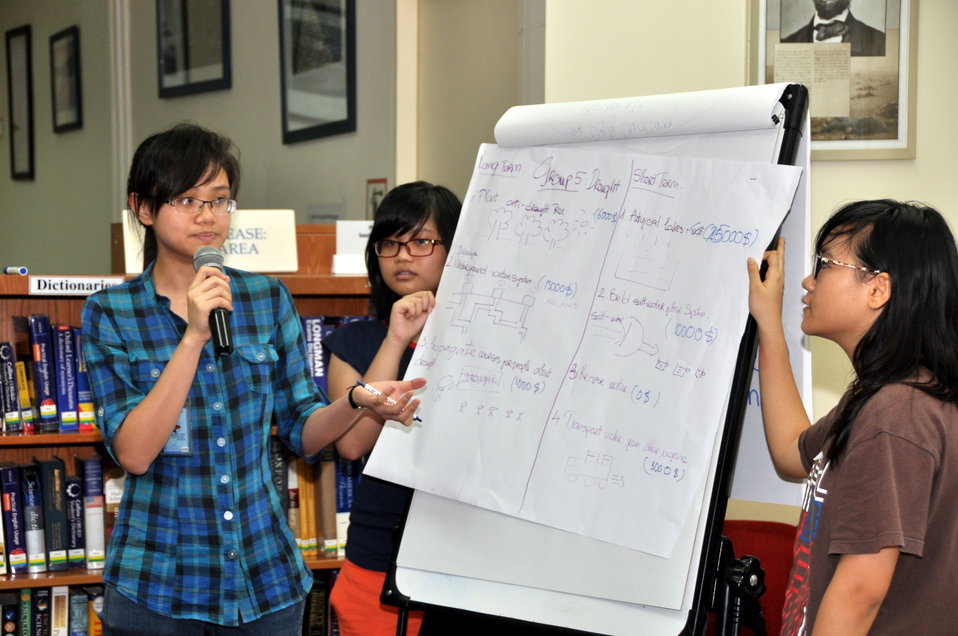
Climate Change Talk at the American Center

Hanoi, May 28, 2013.